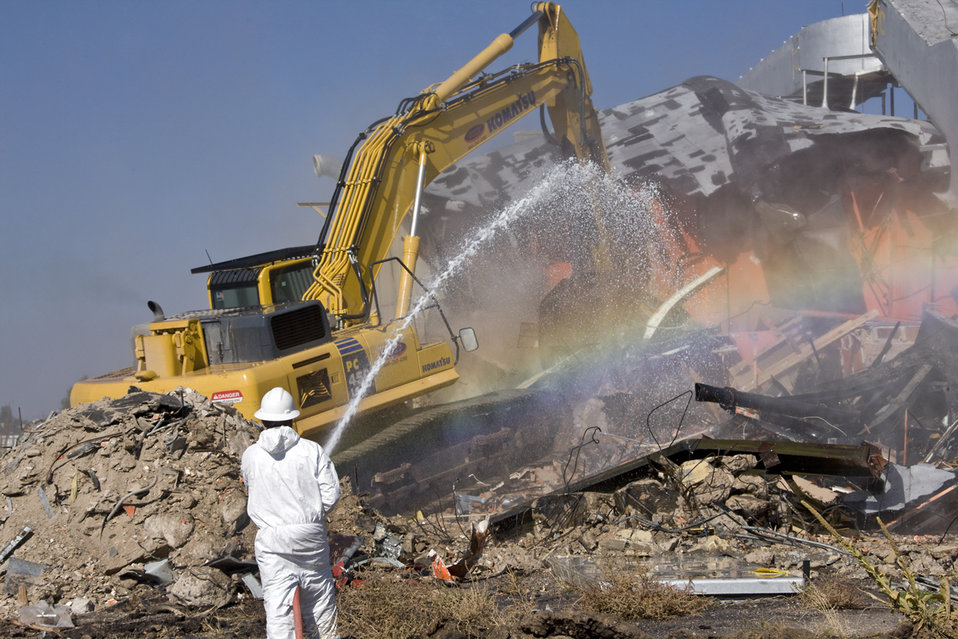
Last Building Demolished at LANL’s DP West

A Recovery Act worker suppresses dust during the demolition of Building 21-5, which was part of the DP West site.
***

The last of 14 buildings at the historic DP West site at Los Alamos National Laboratory’s Technical Area 21 (TA-21) was demolished, reducing the Lab’s footprint by more than 100,000 square feet.

The demolition was funded by the American Recovery and Reinvestment Act (ARRA) and is part of $212 million in ARRA funds the Lab received for environmental remediation.